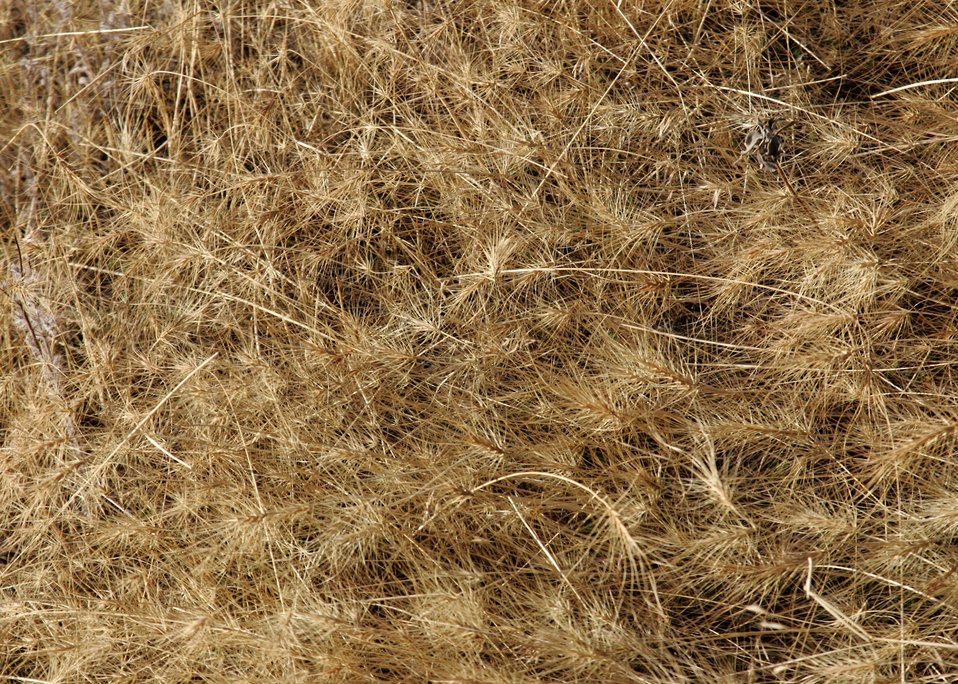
Medusa Head